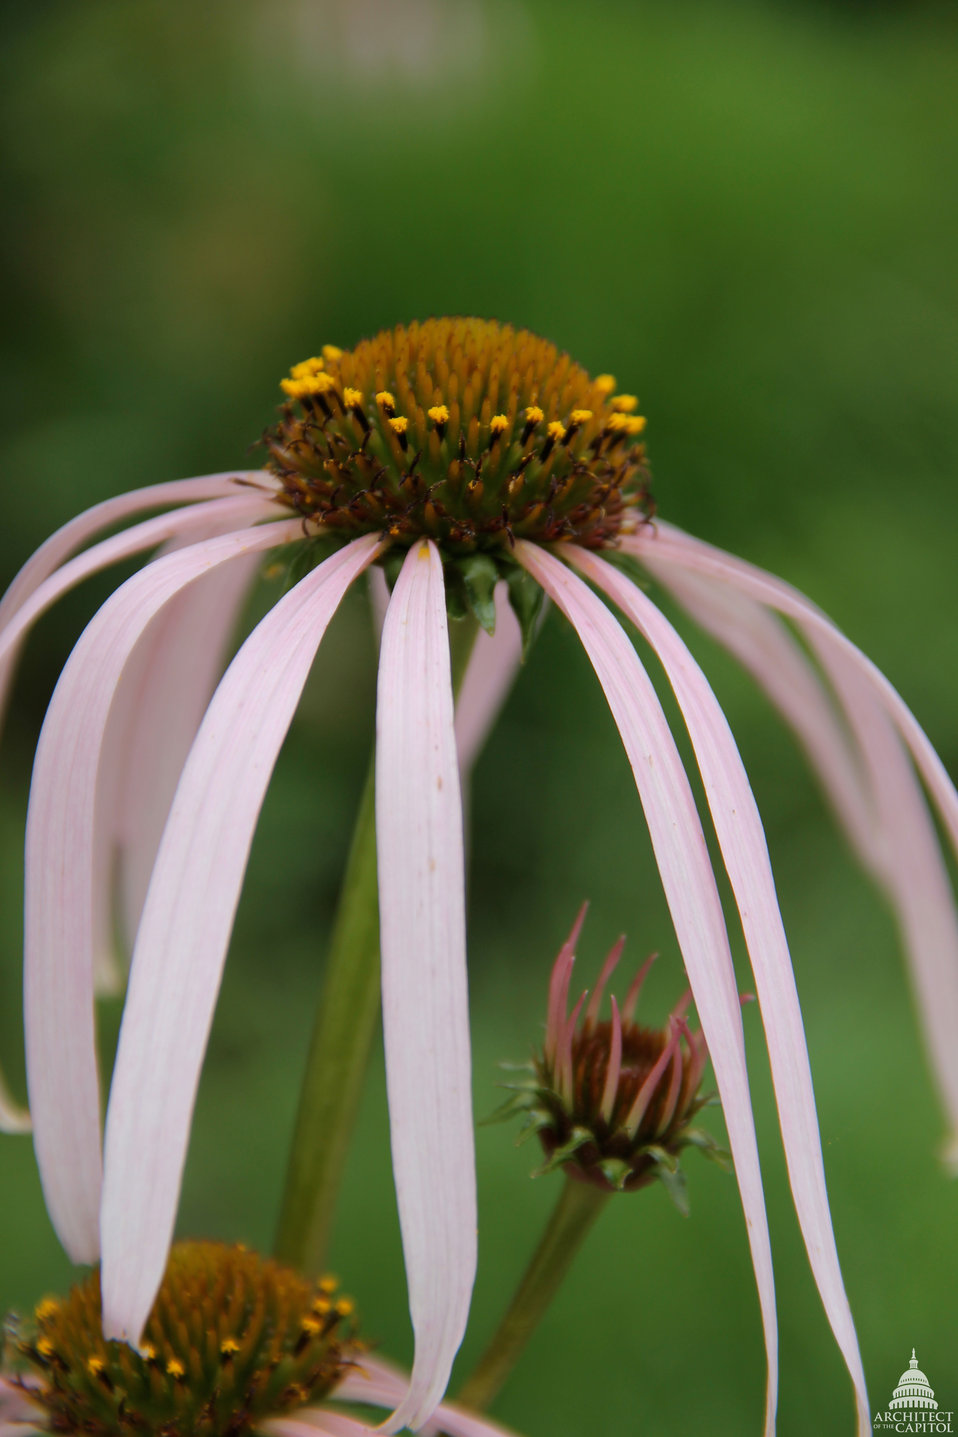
In Bloom at the National Garden - May 2012

Open daily from 10 a.m. to 5 p.m. the National Garden is located adjacent to the U.S. Botanic Garden. The National Garden was created as a place for visitors to experience the diversity of plants, including the rose, America's national flower. It was authorized by Congress in 1988 and opened to the public on October 1, 2006. The National Garden provides 'living laboratories' for environmental, horticultural, and botanical education in a contemplative setting.